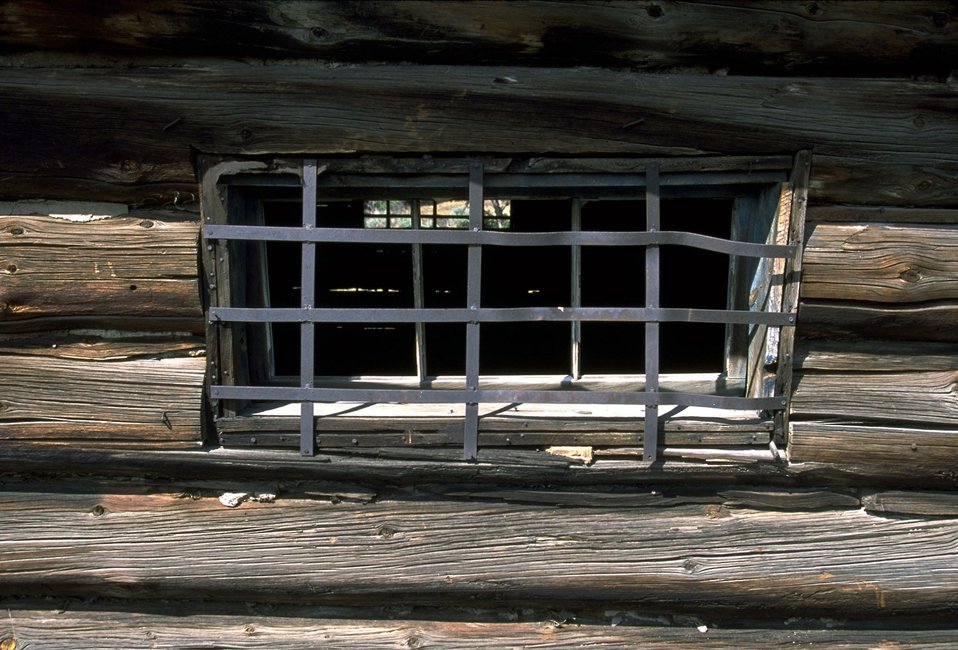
Metal grate on a window of the Will James log cabin in the Four Dances Natural Area